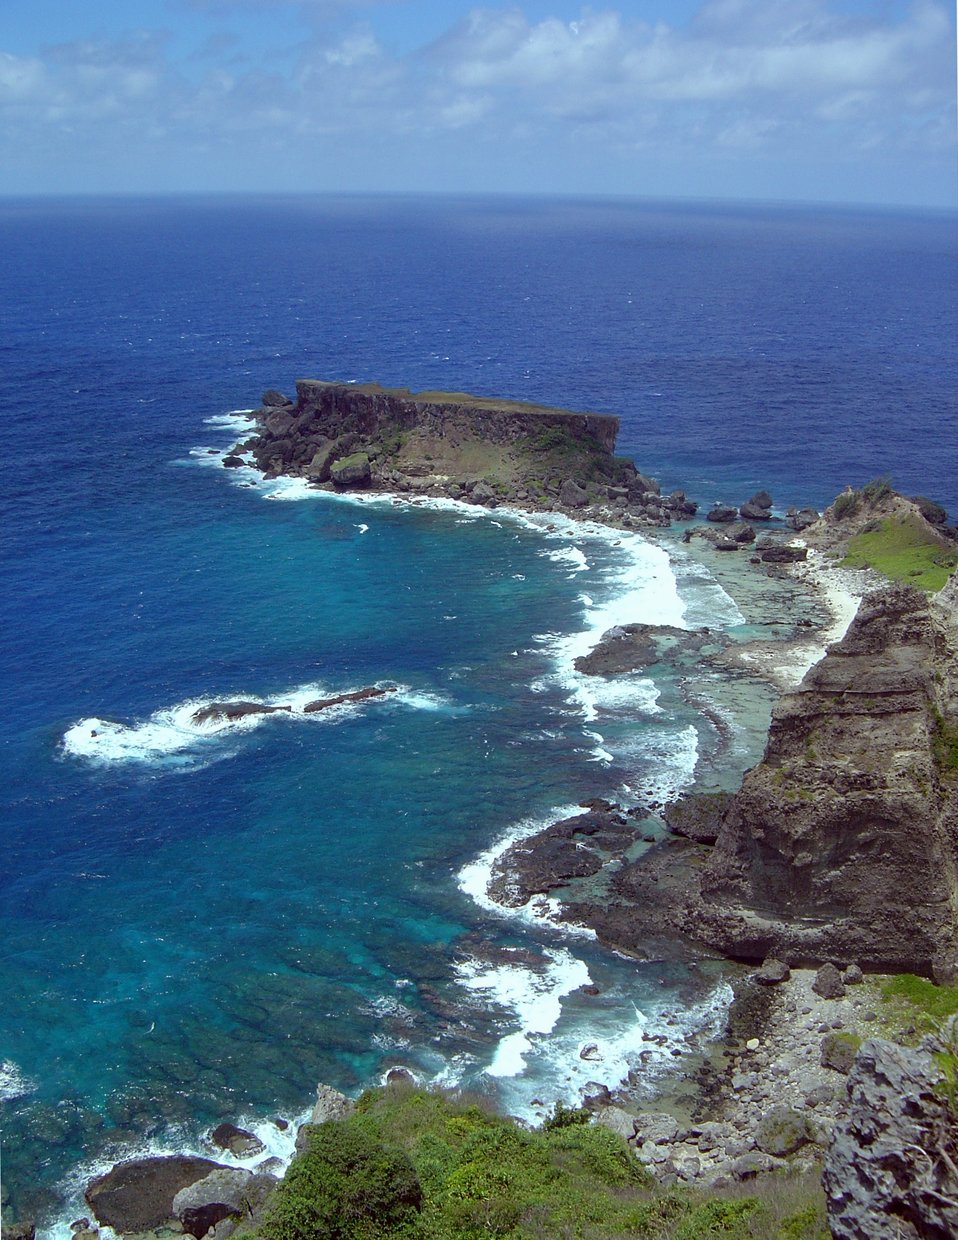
Forbidden Island, offshore from Saipan.